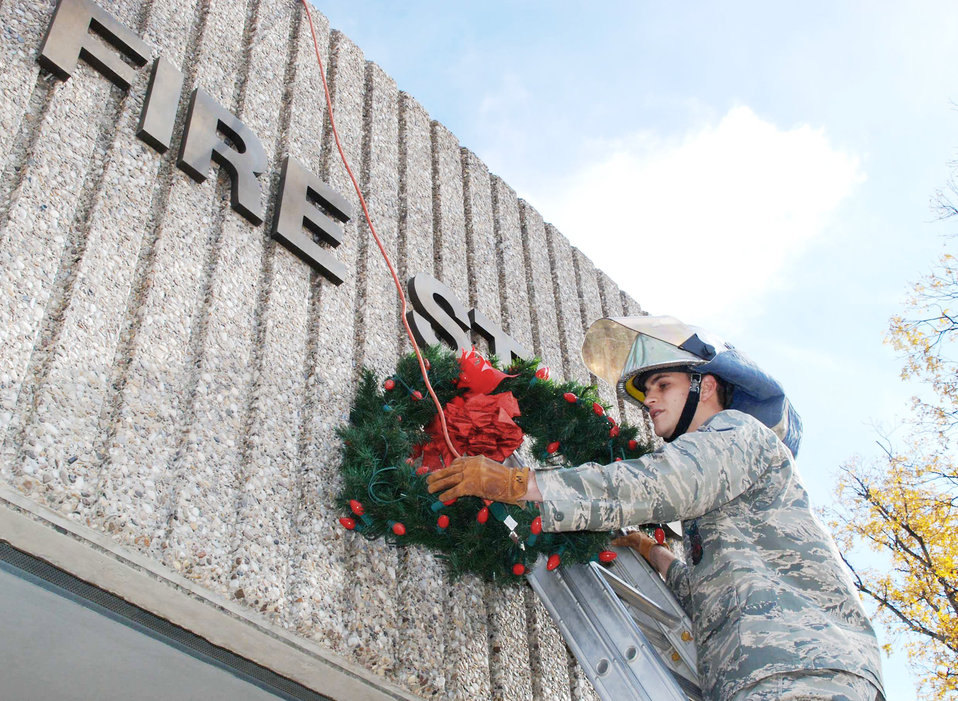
Fire safety reminder?

Airman 1st Class Matthew Hall hangs a wreath on the front of the base fire station at Laughlin Air Force Base, Texas, Dec. 16, 2009. For every holiday fire that occurs on base, one of the wreath's red bulbs will be replaced with a white bulb. Airman Hall is with the 47th Installation Support Squadron.